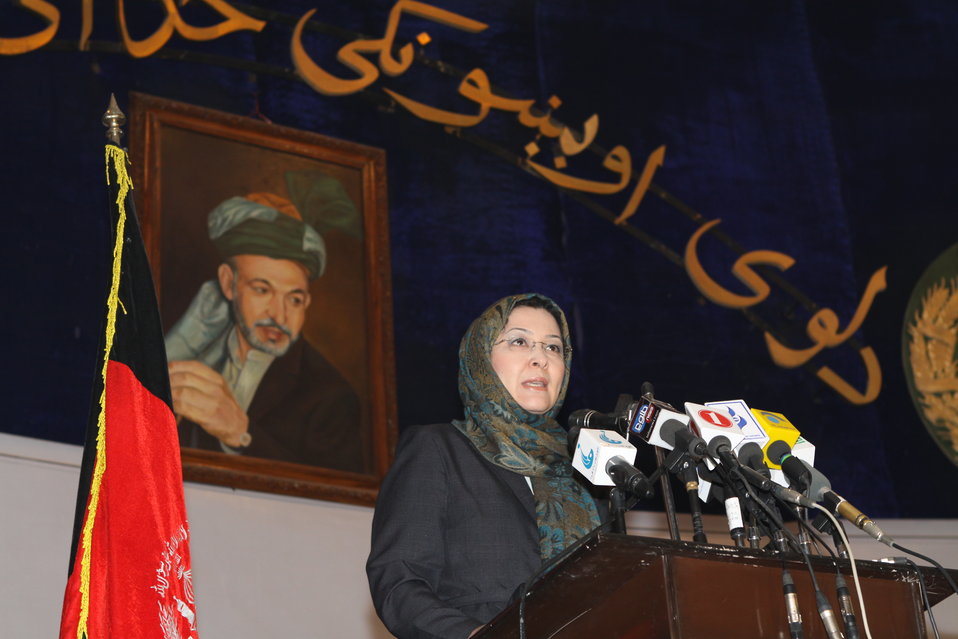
Community Health Workers Celebrated

Kabul, Afghanistan | December 5, 2010 — In support of the United Nations designated International Volunteer Day for Economic and Social Development, Afghanistan’s Ministry of Public Health celebrated its annual Community Health Worker Day today. Acting Minister of Public Health Dr. Suraya Dalil, USAID Senior Deputy Mission Director Robert Hellyer, other government officials, and international donors joined in recognizing the critical contribution of community health workers in Afghanistan and encouraging them to continue their voluntary support to their communities.
The event praised the contributions of the more than 22,000 volunteers throughout the country who deliver community level health-education, counseling, and services out of village health posts located in private homes. The Ministry of Public Health envisioned that community-based healthcare programs will actively encourage communities and families to adopt healthy lifestyles and behaviors, and provide families access to high quality and socially acceptable preventative medicine and life-saving services.
“We have 22,000 community health workers in Afghanistan that are able to implement the basic and standard medicines. They all have been trained through a job description,” said Minister Dalil. Addressing the health workers, she added, “I am proud and feel powerful that I have people like you.”
USAID-funded health projects collaborate closely with the Ministry of Public Health to improve the health and nutritional status of Afghans, provide quality primary healthcare, and promote healthy behaviors at the community and household-levels. USAID supported the training of more than 9,000 of the volunteer community health workers currently working in Afghanistan.
“On behalf of the American people, I congratulate the Community Health Workers for their diligence to gain the skills and knowledge necessary to serve their communities in this important role,” said USAID Senior Deputy Mission Director Hellyer. “USAID strongly supports community based health care and believes that quality community-based health services are essential to reaching Afghanistan’s Millennium Development Goals.”
To support the Basic Package of Health Services, USAID assisted in developing the community health worker training manual, helped train community health worker supervisors and master-trainers, facilitated in-service training, and produced and developed reporting tools, job aids, and education materials.